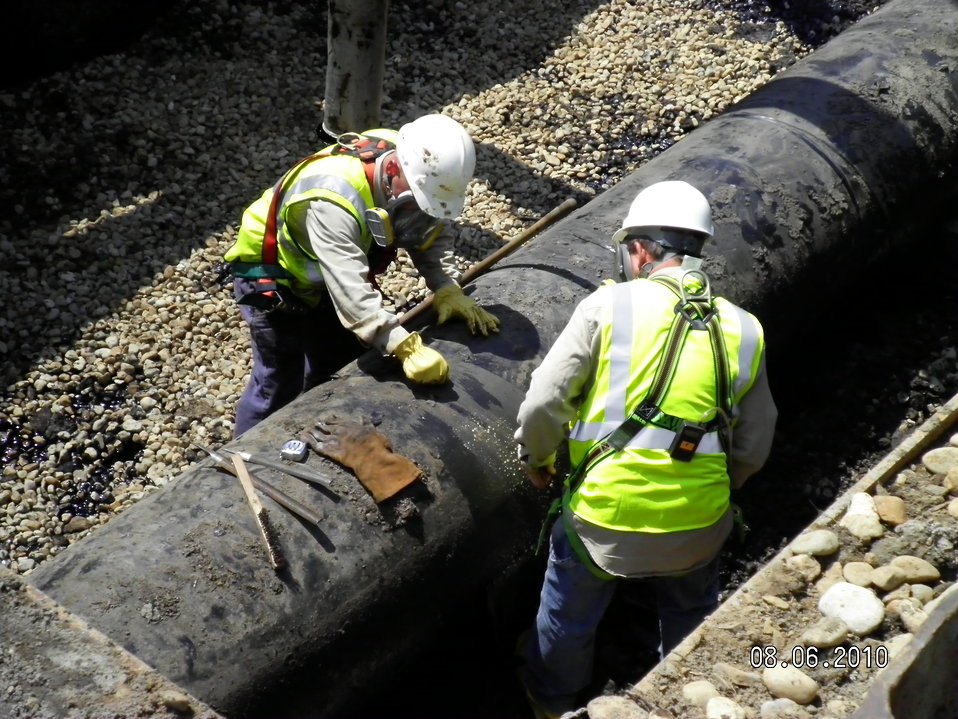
Worker tight - Enbridge Oil Spill pipeline removal 2

Technicians in personal protective equipment prepare pipe before cutting and removing the section from the Enbridge pipeline oil spill site near Marshall, Michigan.